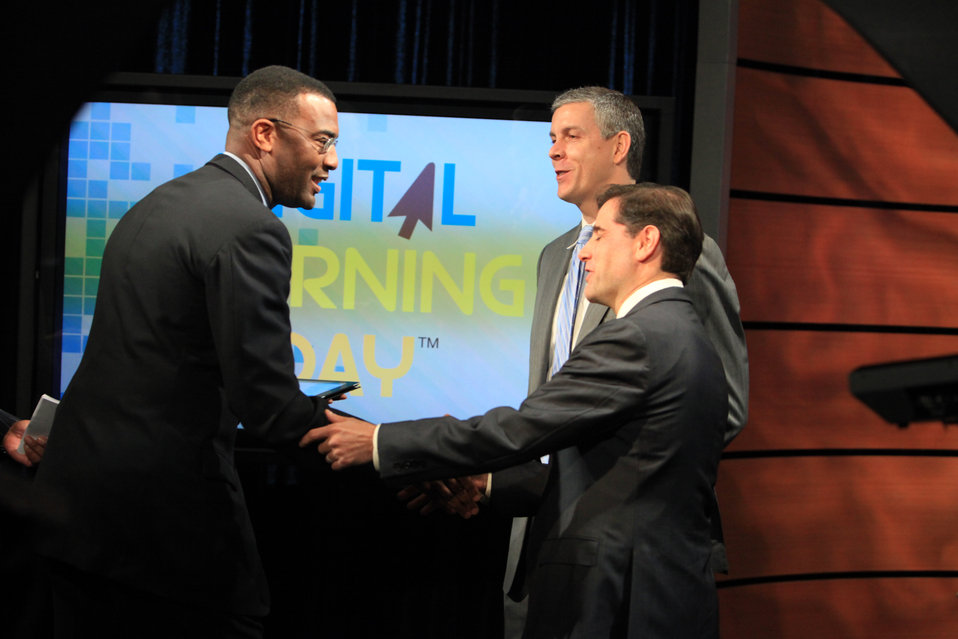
FCC Chairman Genachowski Receives a Thumbdrive at the Digital Learning Day Town Hall

FCC Chairman Genachowski given a thumbdrive at the Digital Learning Day Town Hall in Washington, DC, on February 1, 2012.